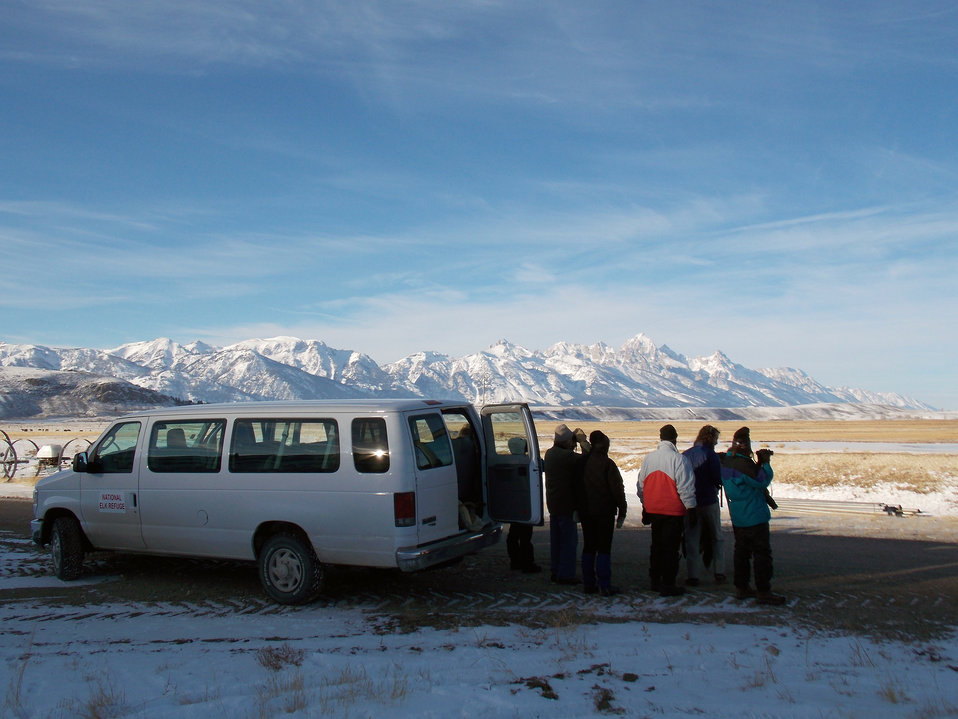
More Than Just Wildlife

In addition to watching for wildlife, participants in the excursions enjoy taking in the breathtaking scenery.